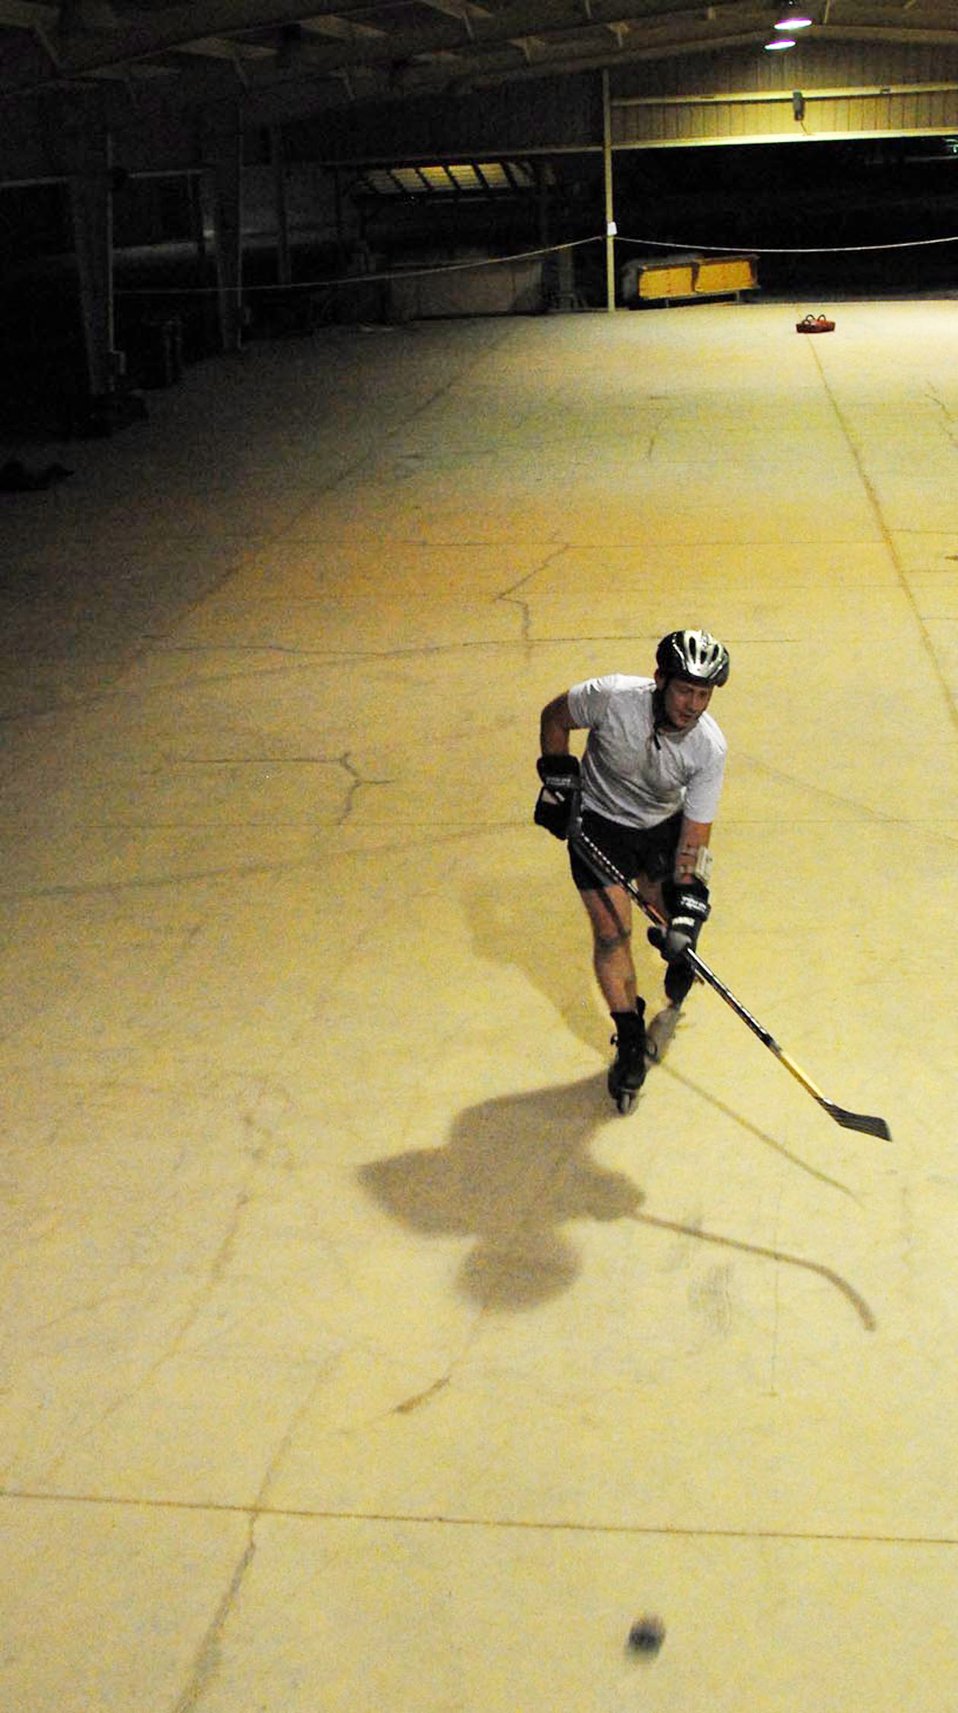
Airman finds peace in desert playing hockey

Tech. Sgt. Wayland J. Baker takes his passion for hockey to the Middle East. During his spare time he practices hockey moves in an empty pavilion. Sergeant Baker, is an active duty Air National Guardsman deployed from the 116th Logistics Readiness Squadron, at Robins Air Force Base, Ga., where he serves as NCO in charge of vehicle operations.